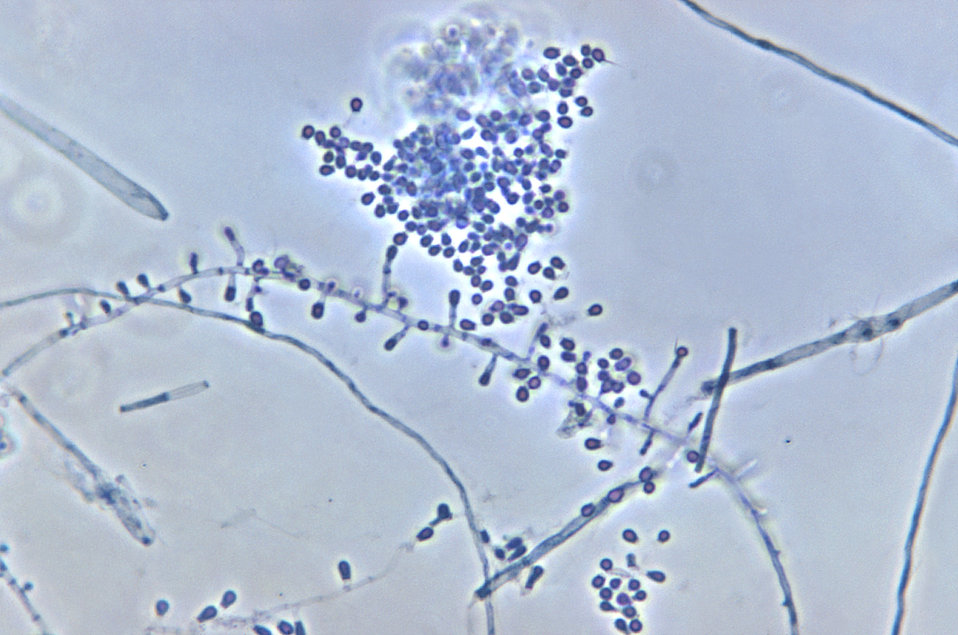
Magnified 500X, this photomicrograph revealed some of the ultrastructural morphology exhibited by the fungal organism, Microsporum persicolor. Of particular note are the numerous microconidia configured both in clusters, and as singular units. These microconidia are the asexual spores and originate from the filamentous conidiophore. These conidia are also known as mitospores, for they are born out of the process of mitosis, and are therefore, haploid when they reach maturity.